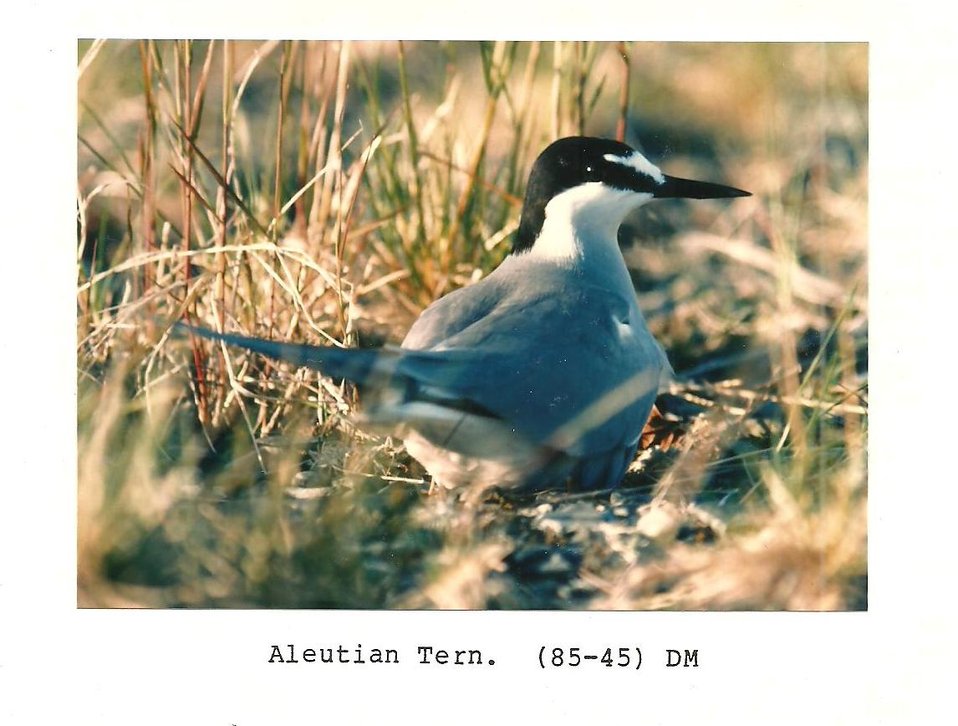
(1985) Aleutian Tern

Credit: USFWS

Source and Contact: Kodiak National Wildlife Refuge